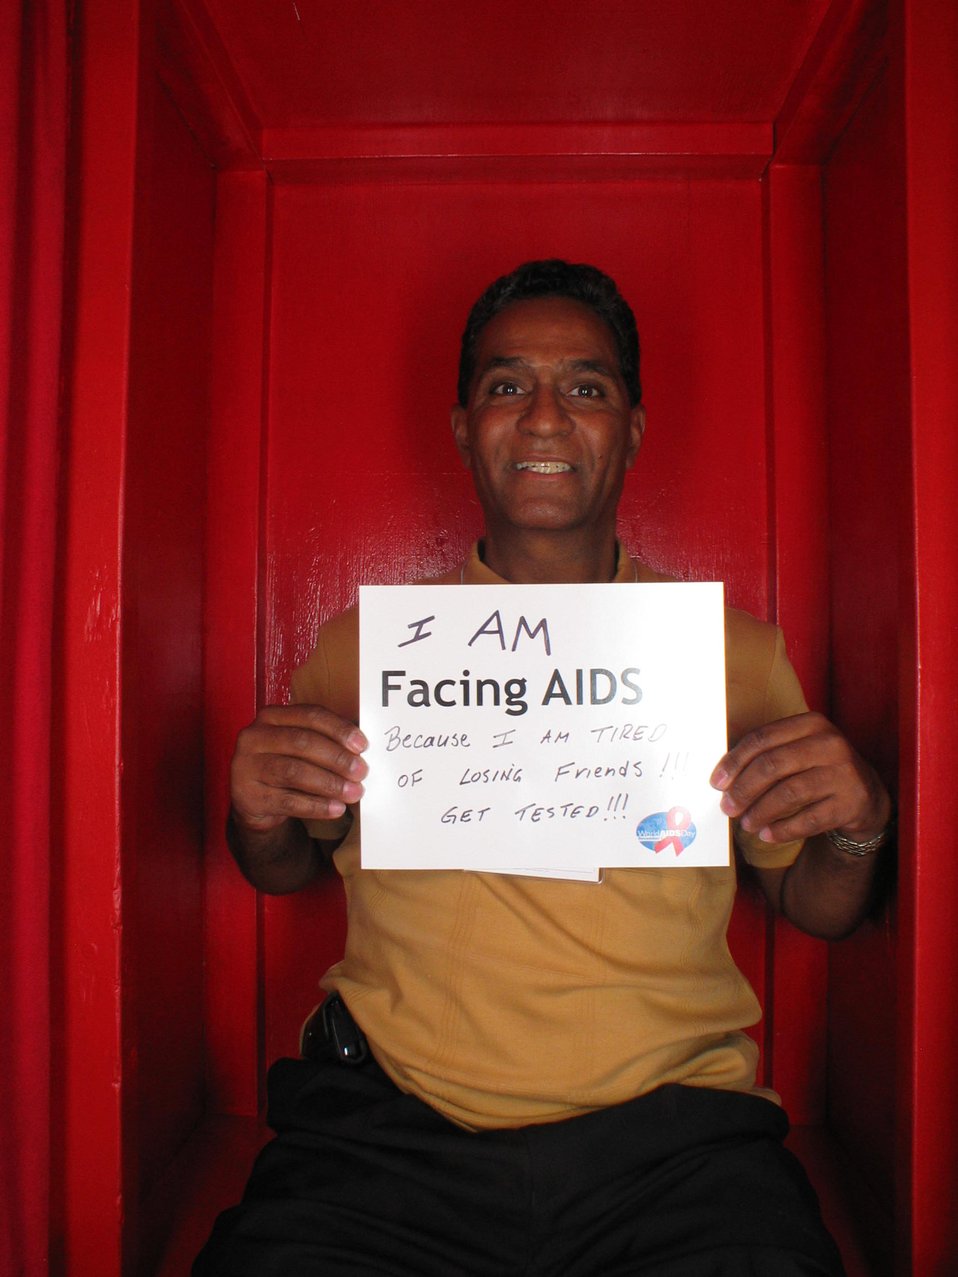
I am Facing AIDS because I am tired of losing friends... GET TESTED!!!